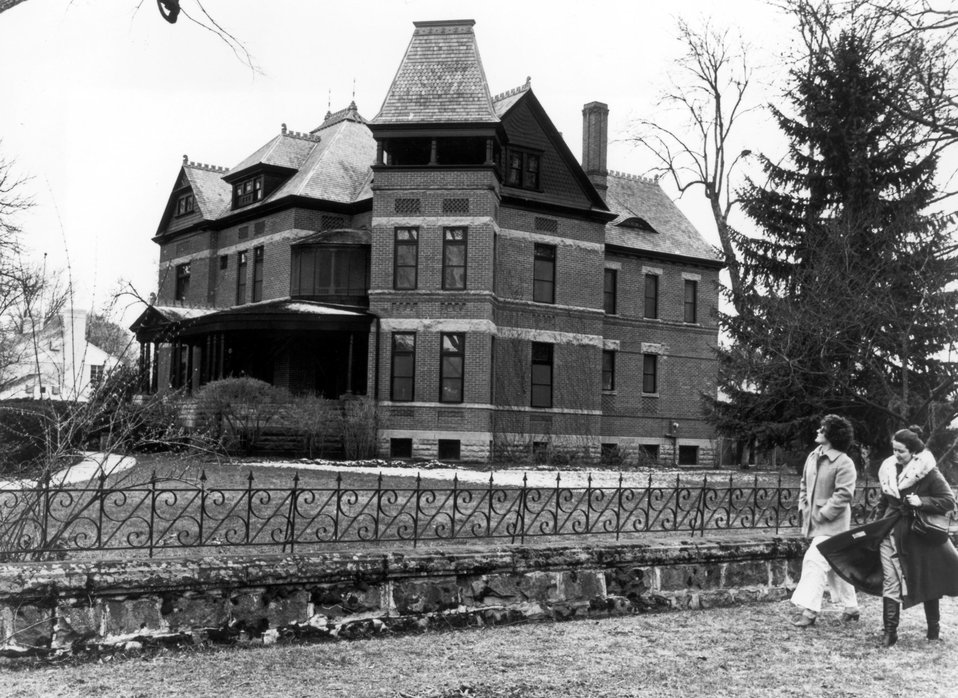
The CW Moore home, built 1883, is the first known residence in the world to be heated by geothermal water.